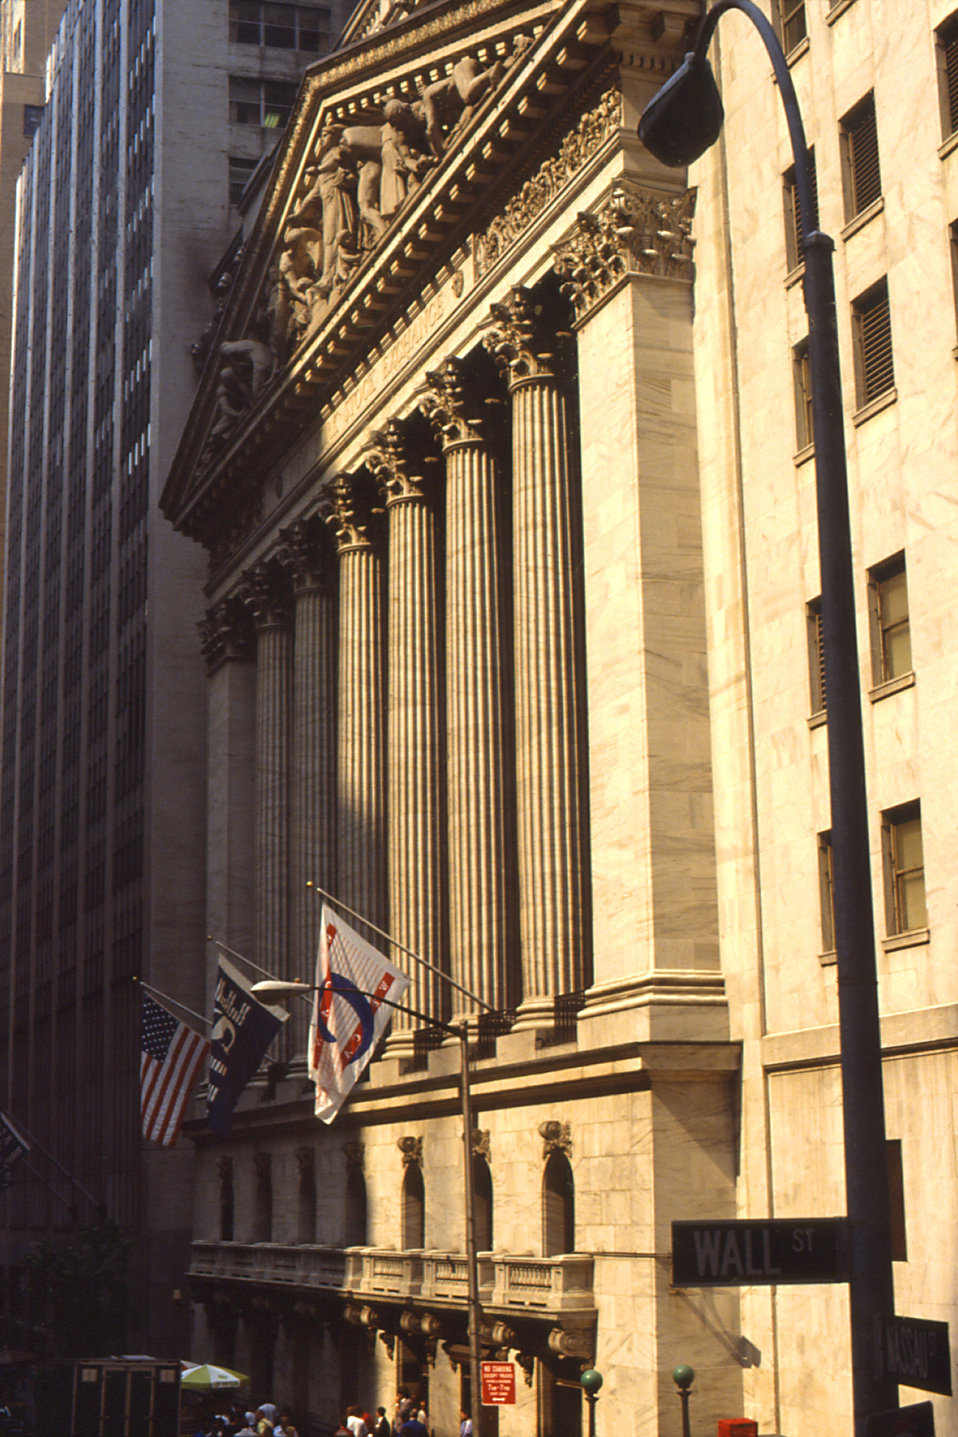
This 1988 photograph depicted the New York Stock Exchange (NYSE) building at 18 Broad Street, on the corner of Wall Street, in New York City. It is a New York City landmark, dating back to 1903. The building is an example of 'neo-classical' style architecture.The NYSE is the largest stock exchange in the world, though its share trading volume was exceeded by NASDAQ in 1993. Its approximately 2,800 companies were estimated at a worth, as of December 2005, of almost $20 trillion, in the aggregate value of their outstanding common shares of stock. The NYSE closed from September 11th through the 17th, 2001, following of the terrorist attacks on the nearby World Trade Center.